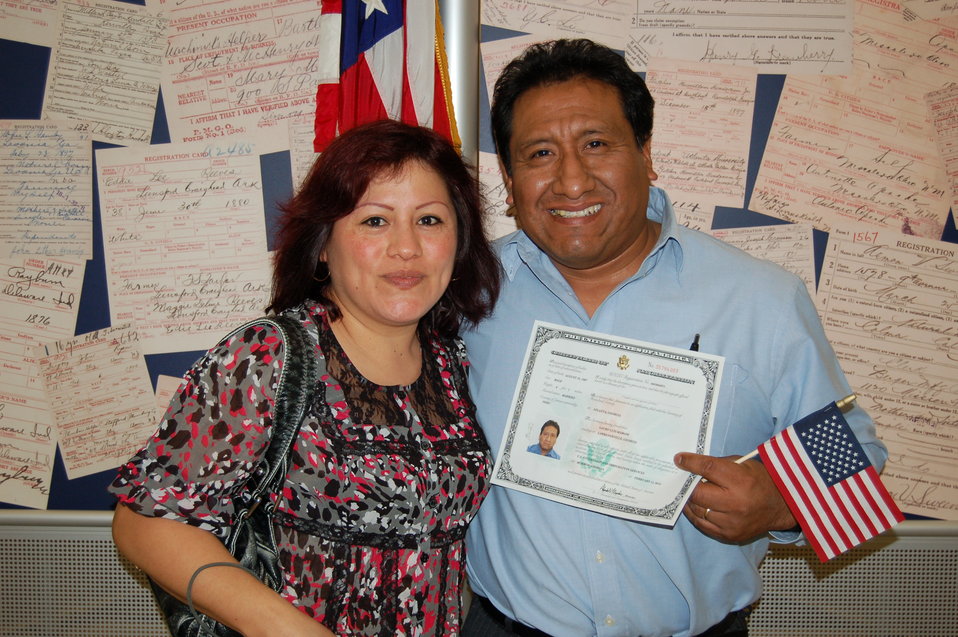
New Citizens